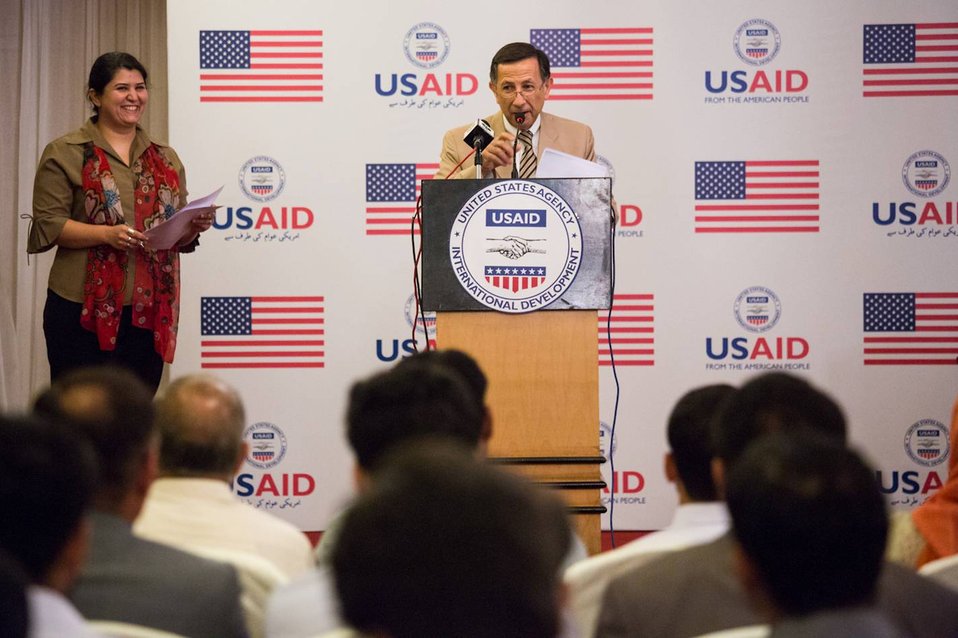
Islamabad, September 26 2012 - Reiterating US's commitment to helping Pakistan modernize its agriculture sector.